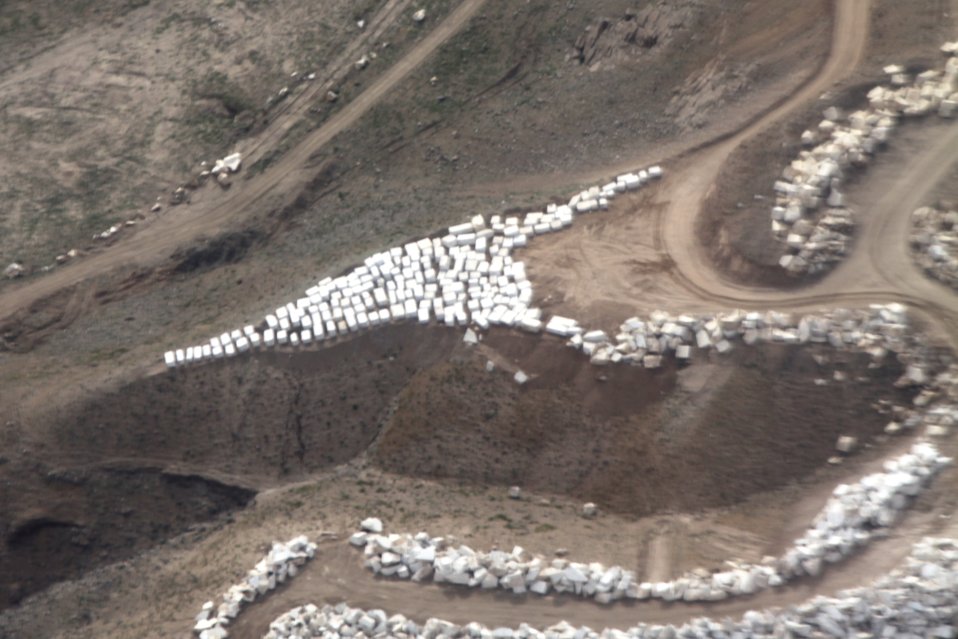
100525 Hirat Marble Conference 019